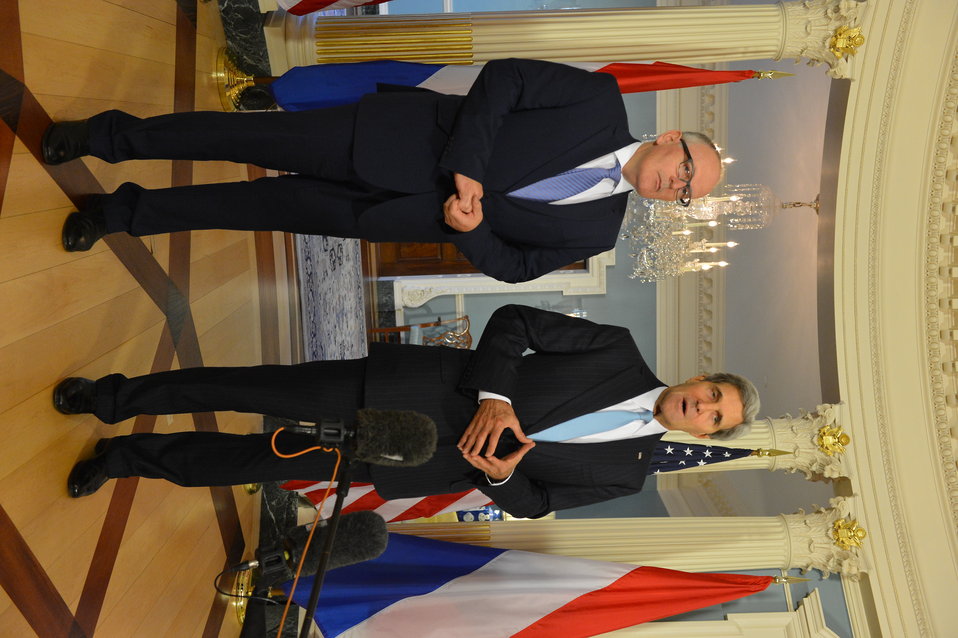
Secretary Kerry and Dutch Foreign Minister Timmermans Address Reporters

U.S. Secretary of State John Kerry and Dutch Foreign Minister Frans Timmermans address reporters before their bilateral meeting at the U.S. Department of State in Washington, D.C., on September 20, 2013.